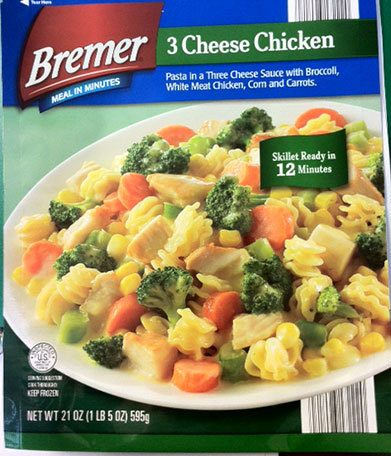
RECALLED - Skillet Meals

November 4, 2013 – Product Recall – Gourmet Express LLC. Voluntarily Recalls 32 Ounce Packages of 'Fusia Chicken Lo Mein' and 21 Ounce Packages Of “Bremer 3 Cheese Chicken” and “Bremer Garlic Shrimp' Due to Possible Undeclared Eggs.